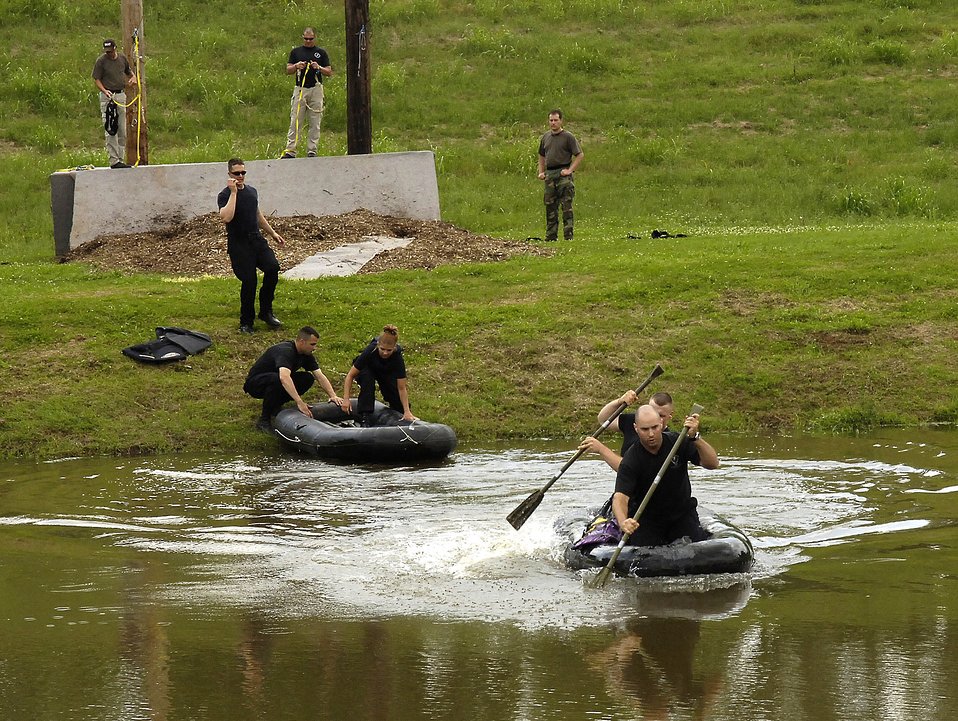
Security forces Airmen at SWAT competition

Members of the Emergency Services Team from Barksdale Air Force Base, La., race across a pond during a timed event at the Louisiana State SWAT Team Competition in Alexandria, La., on Tuesday, May 2, 2006.